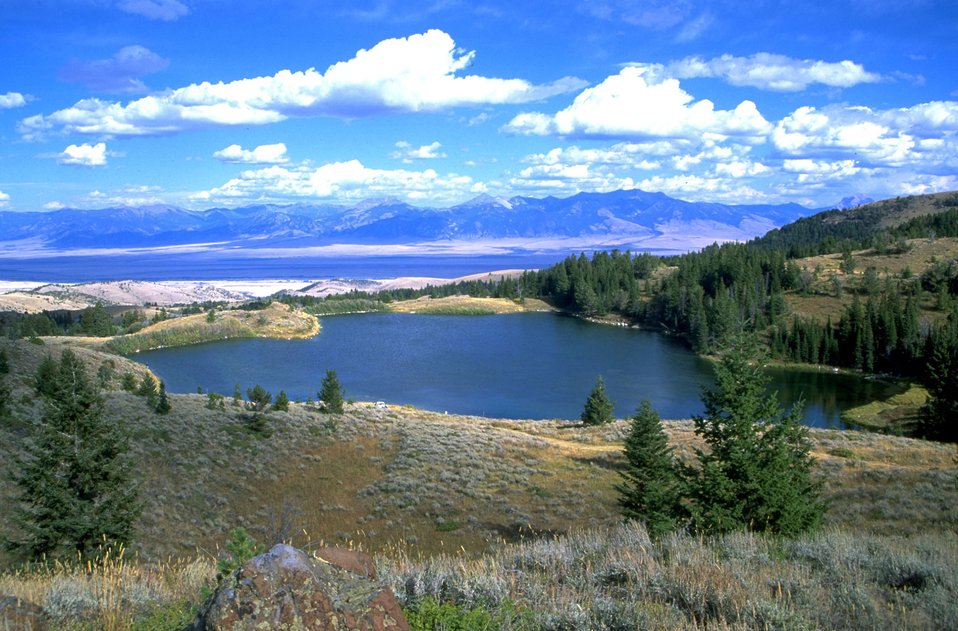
Scenic view of Reservoir Lake